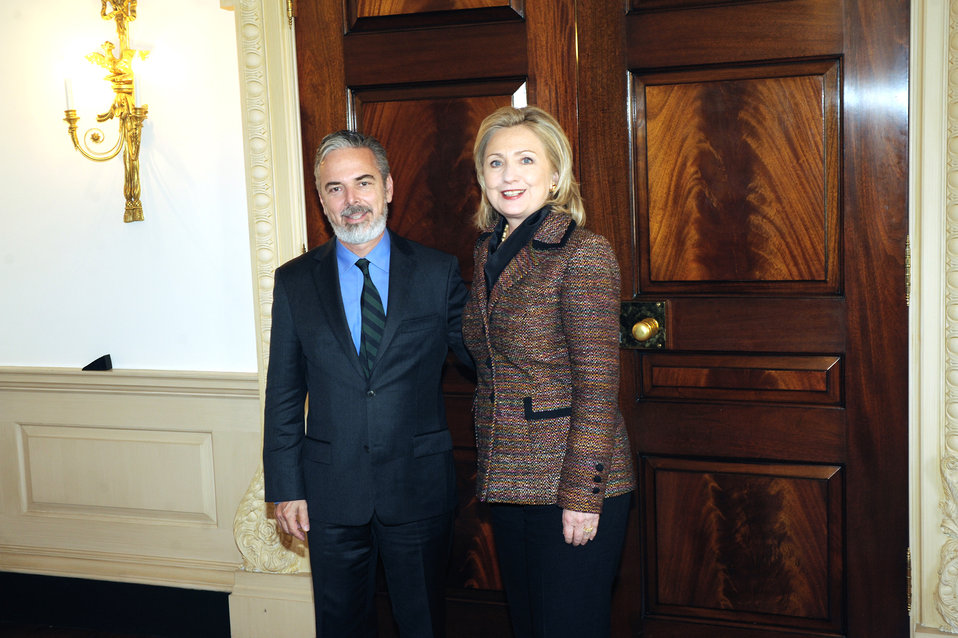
Secretary Clinton Poses for a Photo With Brazilian Foreign Minister Patriota

U.S. Secretary of State Hillary Rodham Clinton poses for a photo with Brazilian Foreign Minister Antonio Patriota at the U.S. Department of State in Washington, D.C., on February 23, 2011.